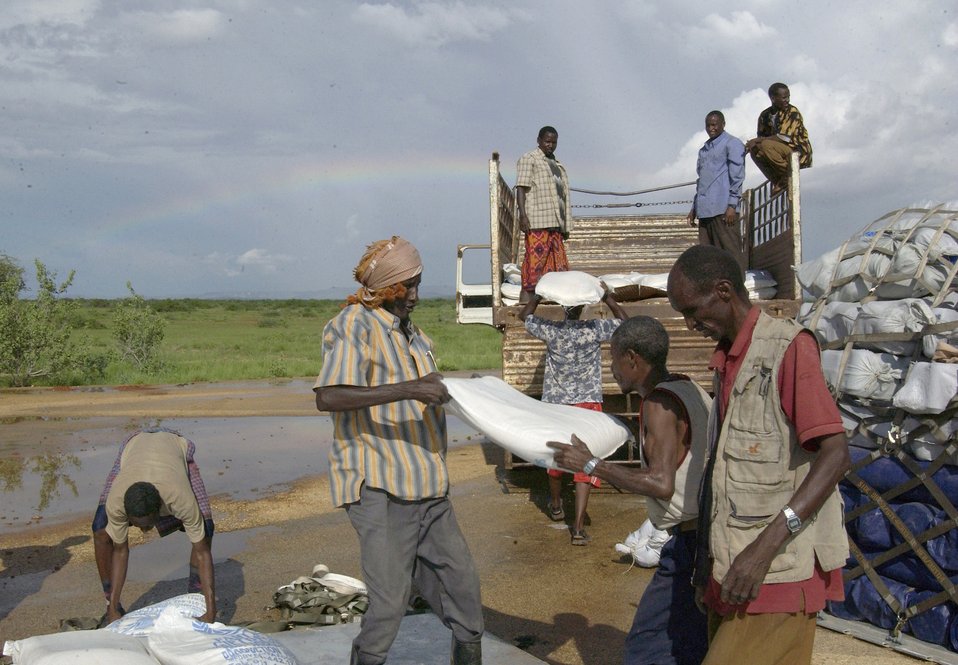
Ethiopia Flood Relief

Local Ethiopians gather supplies on the taxiway in Gode, Ethiopia. C-130 Hercules aircraft assigned to Combined Joint Task Force - Horn of Africa delivered humanitarian aid to flood victims in the Ogaden region of Ethiopia Nov. 10.